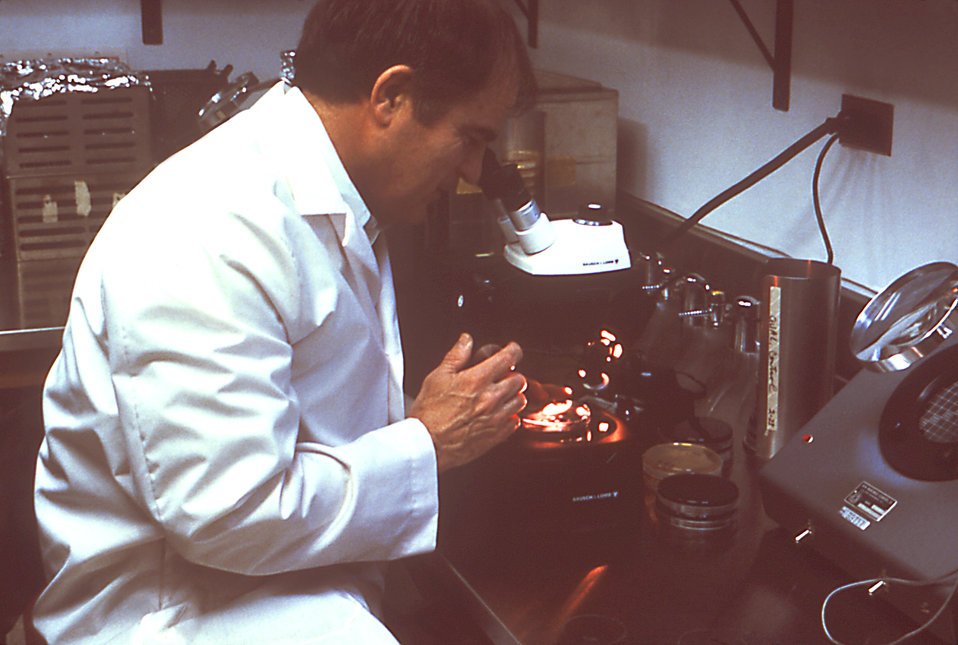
Here a laboratory technician is using a dissecting type of microscope to view a Legionella pneumophilia culture specimen.